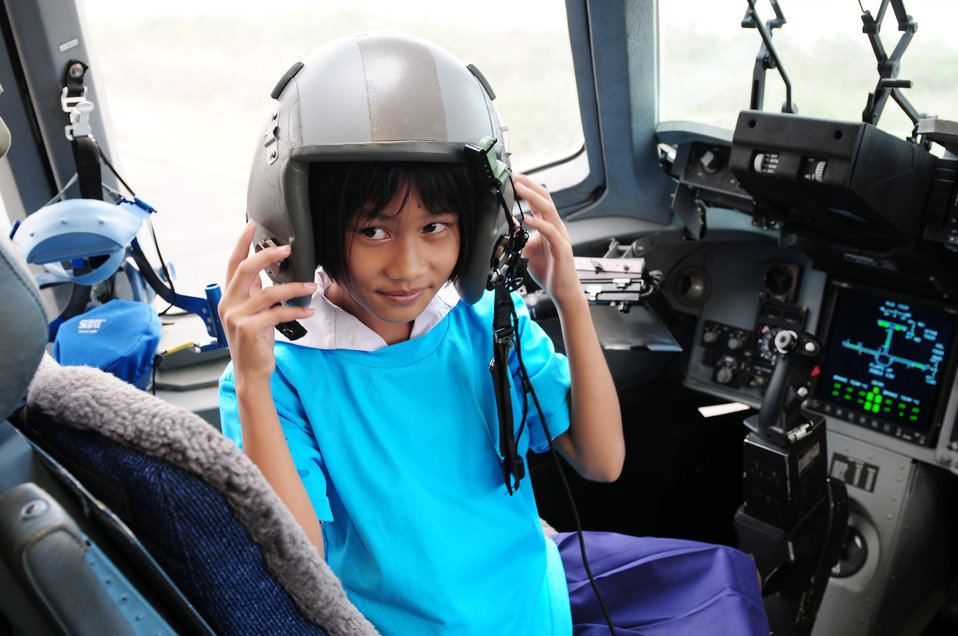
Cope Tiger 2010 open house

A Thai student enjoys sitting in the cockpit of a C-17 Globemaster III during the Cope Tiger 2010 open house held for more than 50 Thai students March 10 at Udon Thani Royal Thai Air Force Base, Thailand.